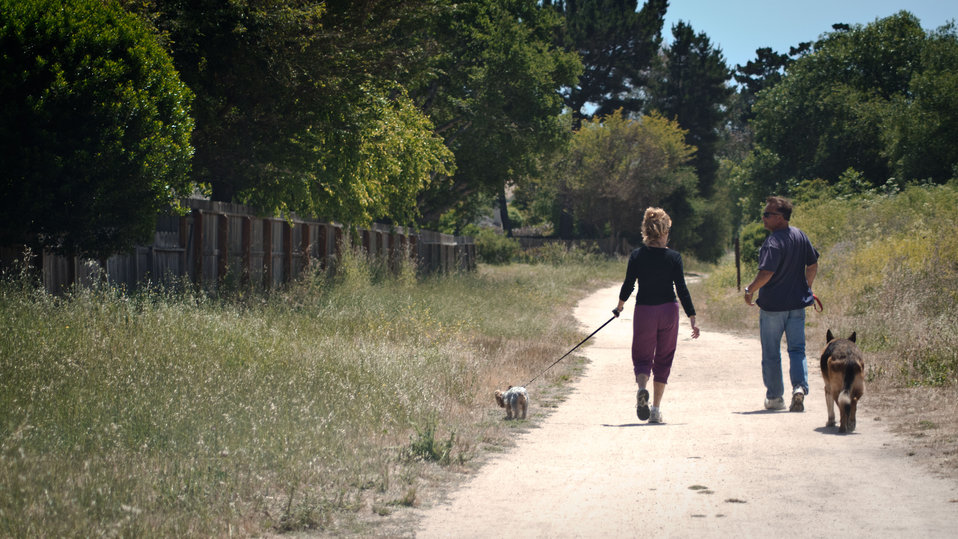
Mark and Leann Rossow walk their dogs along Toro Creek Road, Salinas, CA., on Thursday, June 16, 2011. On the right are Toro Creek and its riparian zone. This area between the creek bottom and the land along its banks that seasonal water flows is an ecosystem of trees, grass, and various deep-rooted plants. Plants such as Willow trees, bushes and grasses normally provide the organic stabilization of the soil. A functioning riparian zone supports a clean Monterey Bay by removing sediments and other contaminants; reducing the risk of flooding and associated damage; reducing stream channel and stream bank erosion; increasing available water and stream flow duration by holding water in stream banks and aquifers; supporting a diversity of plant and wildlife species; to name some of the benefits stated in references. This Bureau of Land Management property also allows ranchers to purchase permits allowing their sheep (totaling 1,000 to 2,000) to graze the hills of the 7,200-acre property. The reduction of excess grass reduces fuel for fires. The sheep manure also provides nutrients to help the soil remain healthy.